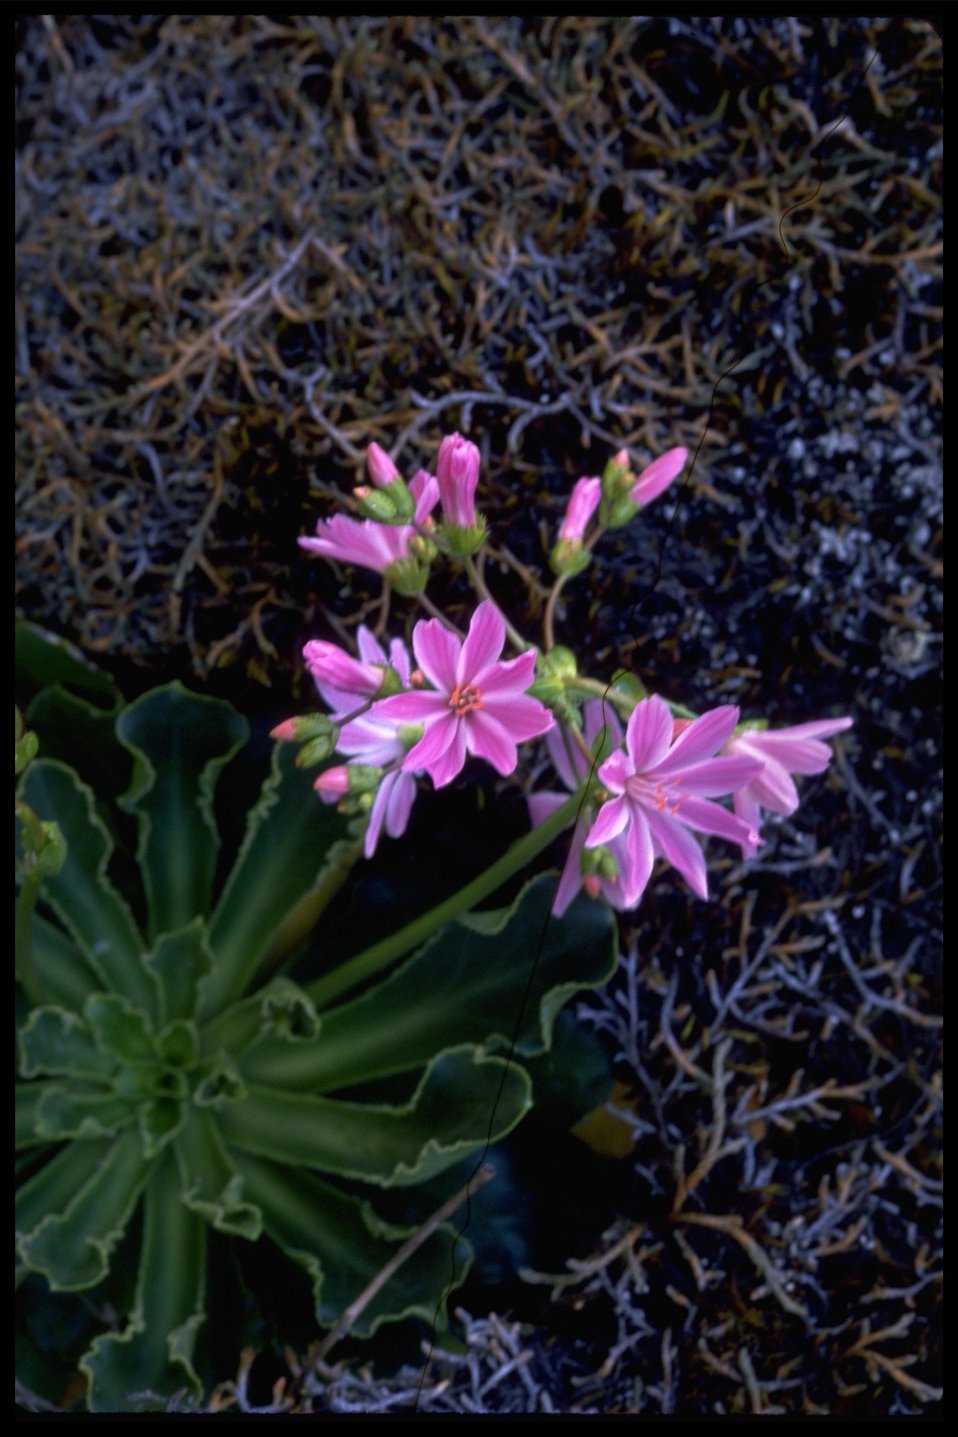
Medium shot of imperial lewisia (Lewisia cotyledon var. howellii).